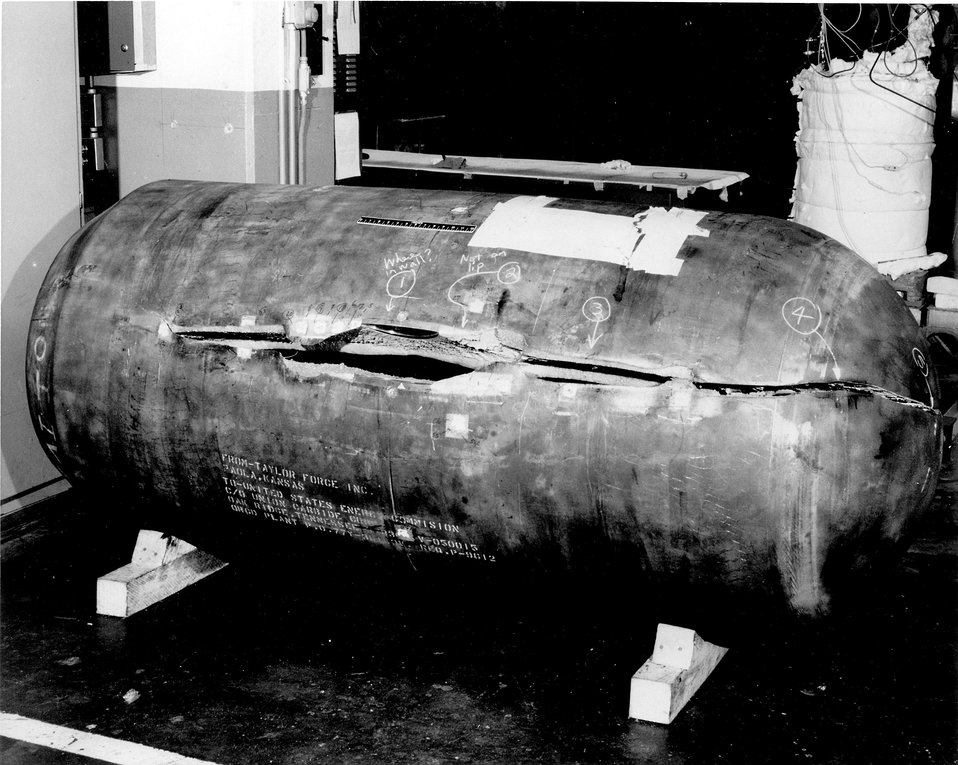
Photograph (two of three) of a water-cooled reactor vessel model that was deliberately flawed and then put under pressure to the point of failure to obtain data. c. 1973